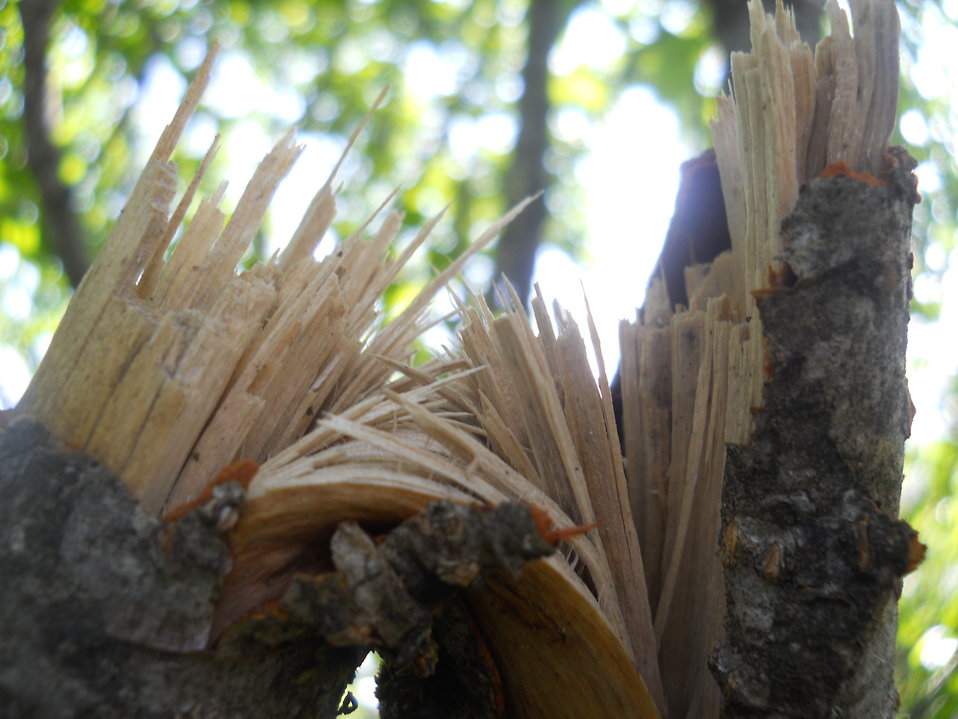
Splinters

Credit: USFWS
Photo taken by a Salmon Camp participant during a nature photography activity.

Source and Contact: Kodiak National Wildlife Refuge